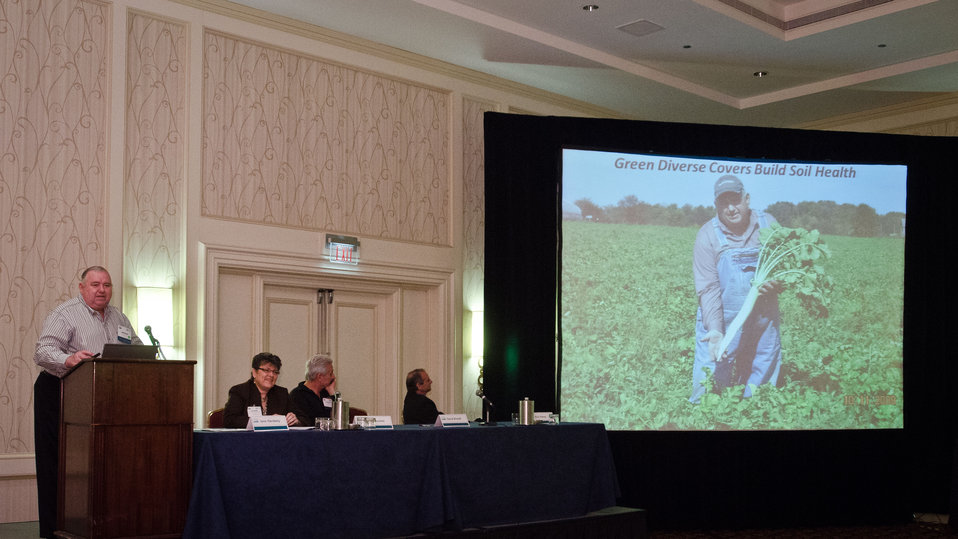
Brandt Farms Conservation Farmer David Brandt, of Carroll, OH speaks about the business benefits of no-till soil nutrient management, and shows a photo of himself with the type of radish plant he uses to naturally till his fields at least 15' deep, during the U.S. Department of Agriculture (USDA) 2013 Agricultural Outlook Forum, held at the Crystal Gateway Marriott Hotel in Arlington, VA on Friday, Feb. 22, 2013. Agriculture Secretary Thomas Vilsack mentions, in his opening address how Mr. Brandt’s multi-cropping/double-cropping practices have increased soil matter, saving about $100 per acre in nitrogen, increased corn yield by 7-10 bushels per acre, and soybean yield 8 percent. This exemplified what Secretary Vilsack said is a possible strategy for managing risk. Brandt farms 1,200 acres of continuous no-till corn, soybeans and wheat, using hairy vetch, oilseed radish, cereal rye, and Austrian winter peas as cover crops. Mr. Brandt is the modern farmer that uses education, scientific study, and commonsense observations to understand that healthy soils are the key to a productive farm. This breakout session generally focused on Reducing Risks by Improving Soil Health, examined the indicators of soil health, to reduce chemical inputs and apply the right techniques for sustainable production and other benefits. Soil health is defined as the capacity of the soil to function as a living ecosystem that sustains plant, animal, and human health with limited human intervention.
His presentation is available at www.usda.gov/oce/forum/presentations/Brandt.pptx